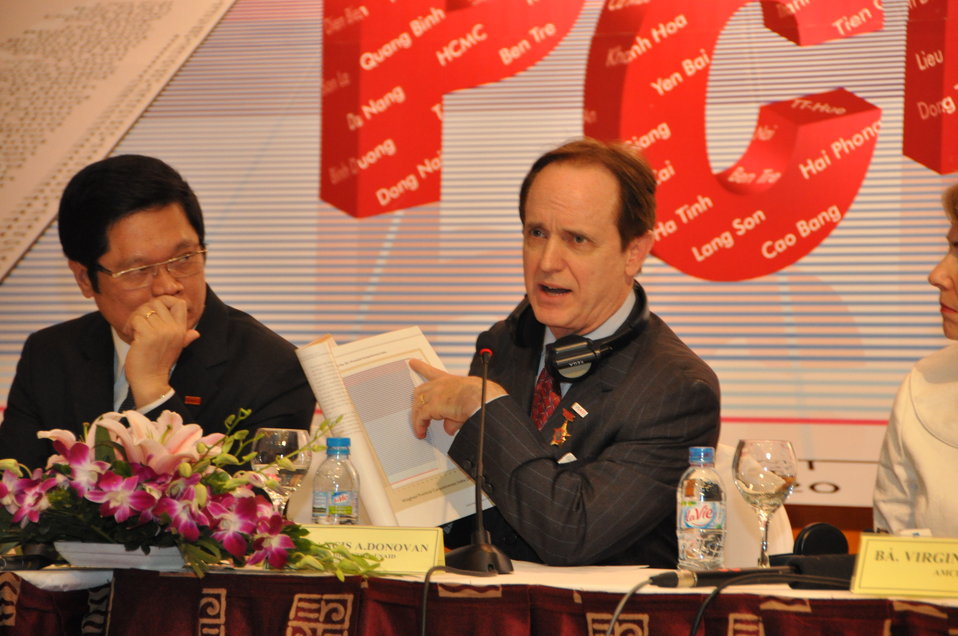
USAID Mission Director Francis Donovan at the Provincial Competitiveness Index 2011 Launch